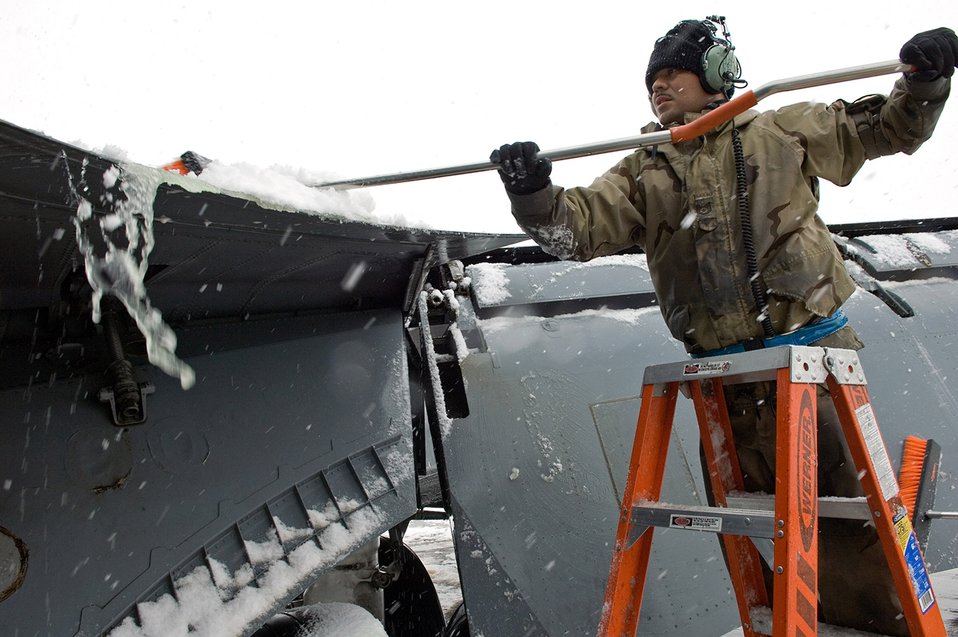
Airmen keep misson running despite subzero tempatures

Staff Sgt. Manuel Garibay, sweeps snow from the wing after a recent snow storm. Sergeamt Garibay is deploye to the 376th Expeditionary Aircraft Maintenance Squadron.